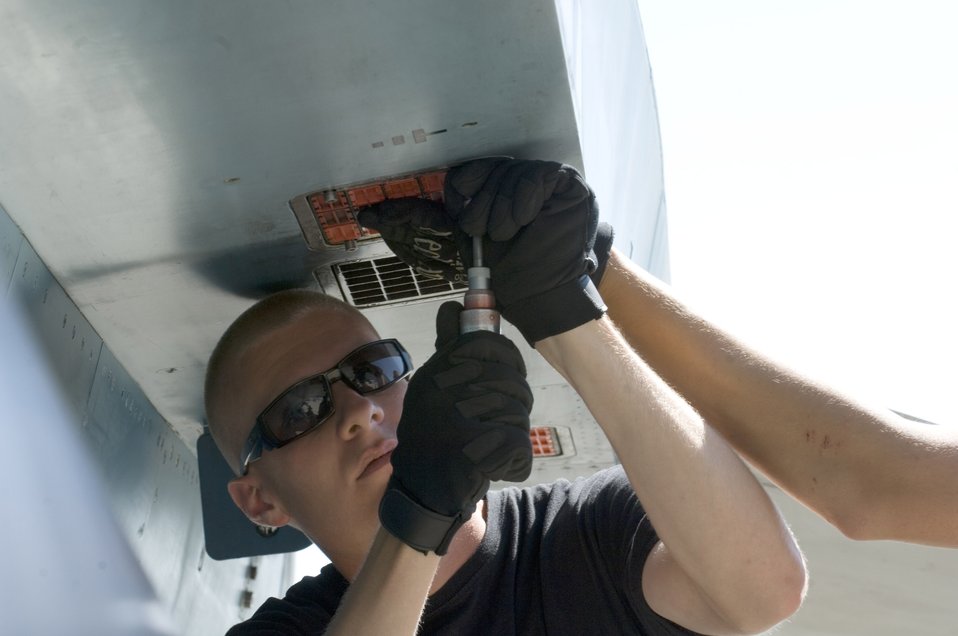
Aggressors give Blue Forces realistic training

Airman 1st Class Zachariah Brown replaces flares after a post flight inspection on a F-16 Fighting Falcon during the Maple Flag Exercise at Cold Lake, Canada. Airman Brown is weapons load crew from the 64th Aggressor Squadron, Nellis Air Force Base, Nev. Maple Flag 41 is a four-week international air combat exercise held annually at 4 Wing Cold Lake, Alberta. The exercise provides Canadian and allied aircrew with realistic training in a modern simulated air combat environment, and it emphasizes air operations, involving large package coalition forces.